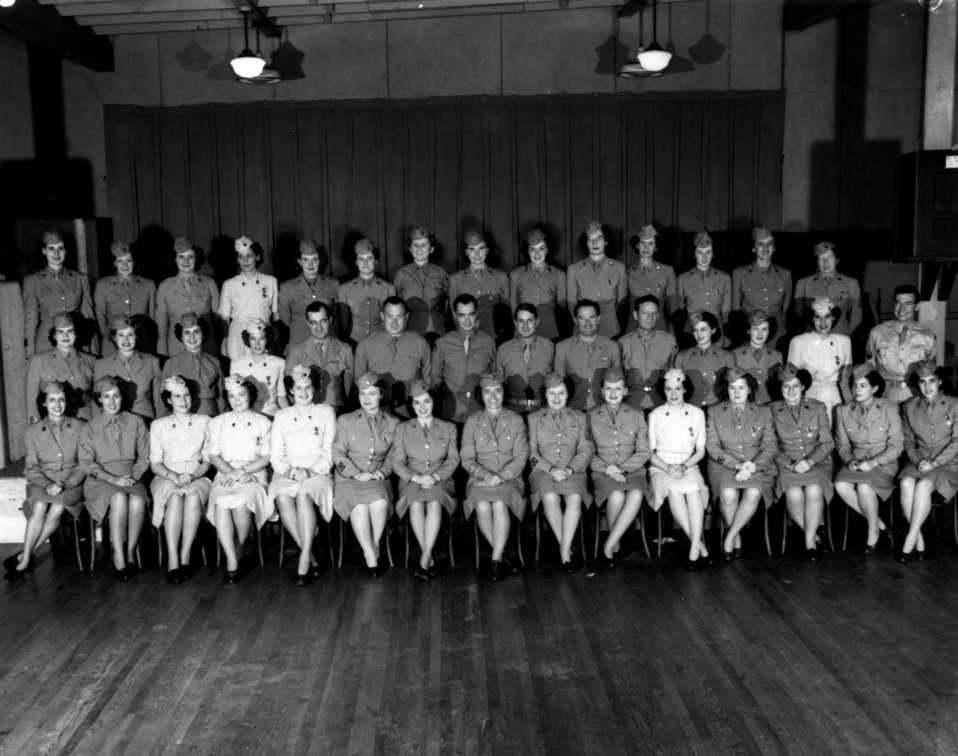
Army Activity at Oak Ridge